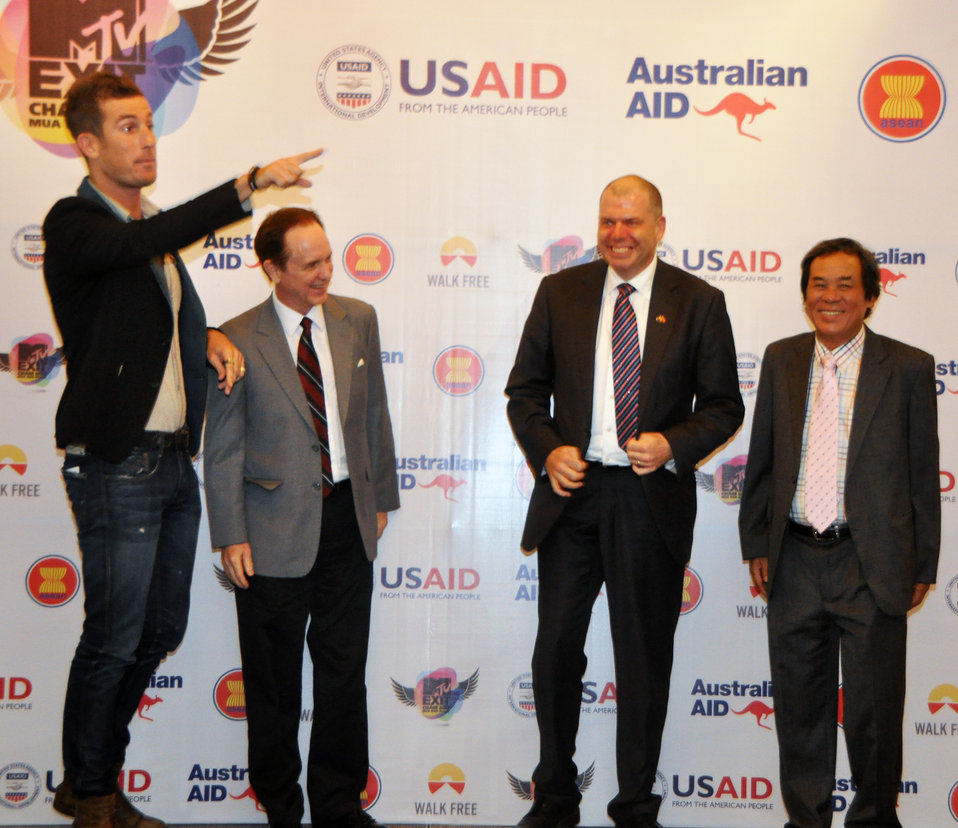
USAID joins MTVExit to launch documentary and awareness campaign against human trafficking